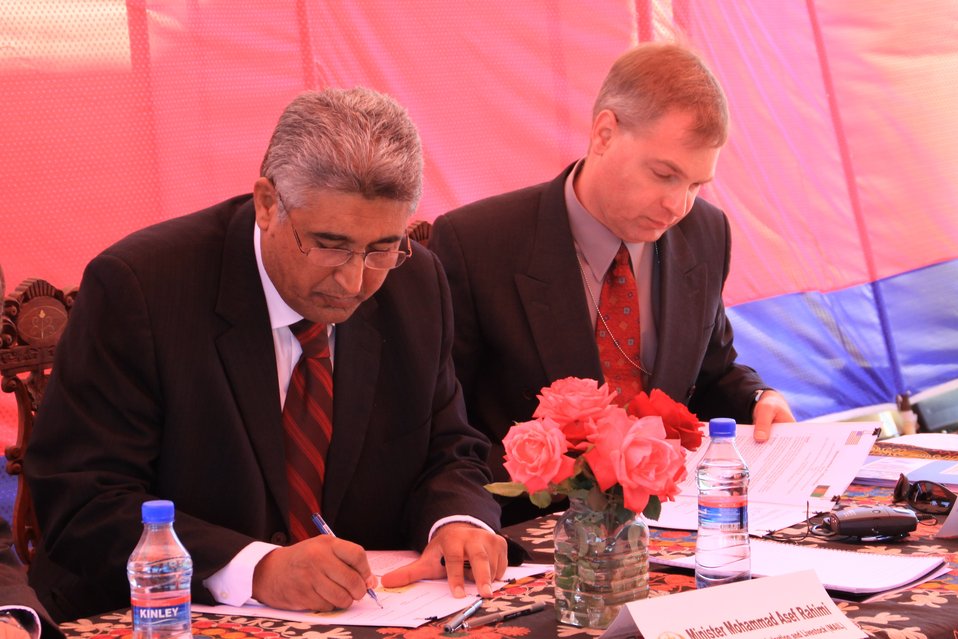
AVIPA Plus Wheat Seed Distribution 101005

US Ambassador Karl Eikenberry and USAID Acting Mission Director Kevin Brownawell joined the Minister of Agriculture, Irrigation and Livestock, H.E. Minister Mohammed Rahimi in signing a Memorandum of Understanding and distributing vouchers to area farmers for wheat and fertilizer.